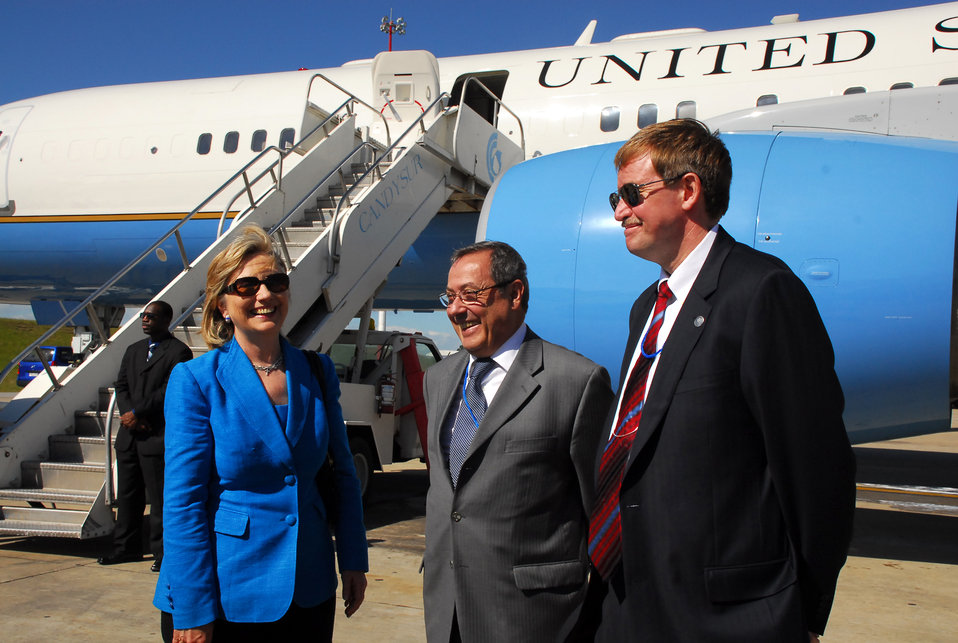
Secretary Clinton Visits Uruguay

U.S. Secretary of State Hillary Rodham Clinton poses with Uruguayan Ambassador to the United States Carlos Gianelli and U.S. Ambassador to Uruguay David D. Nelson prior to her departure from Montevideo, Uruguay March 1, 2010.